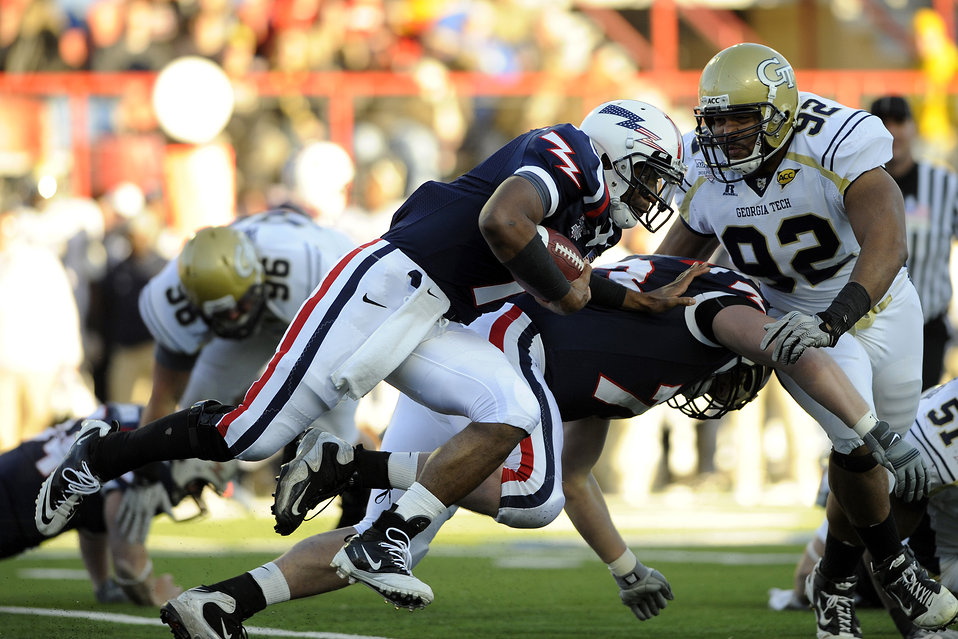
Falcons ground Yellow Jackets

Air Force Falcon quarterback Tim Jefferson runs around the block during the first quarter against the Georgia Tech Yellow Jackets during the Advocare V100 Independence Bowl Dec. 27, 2010, in Shreveport, La. The Air Force Academy defeated Georgia Tech 14-7.